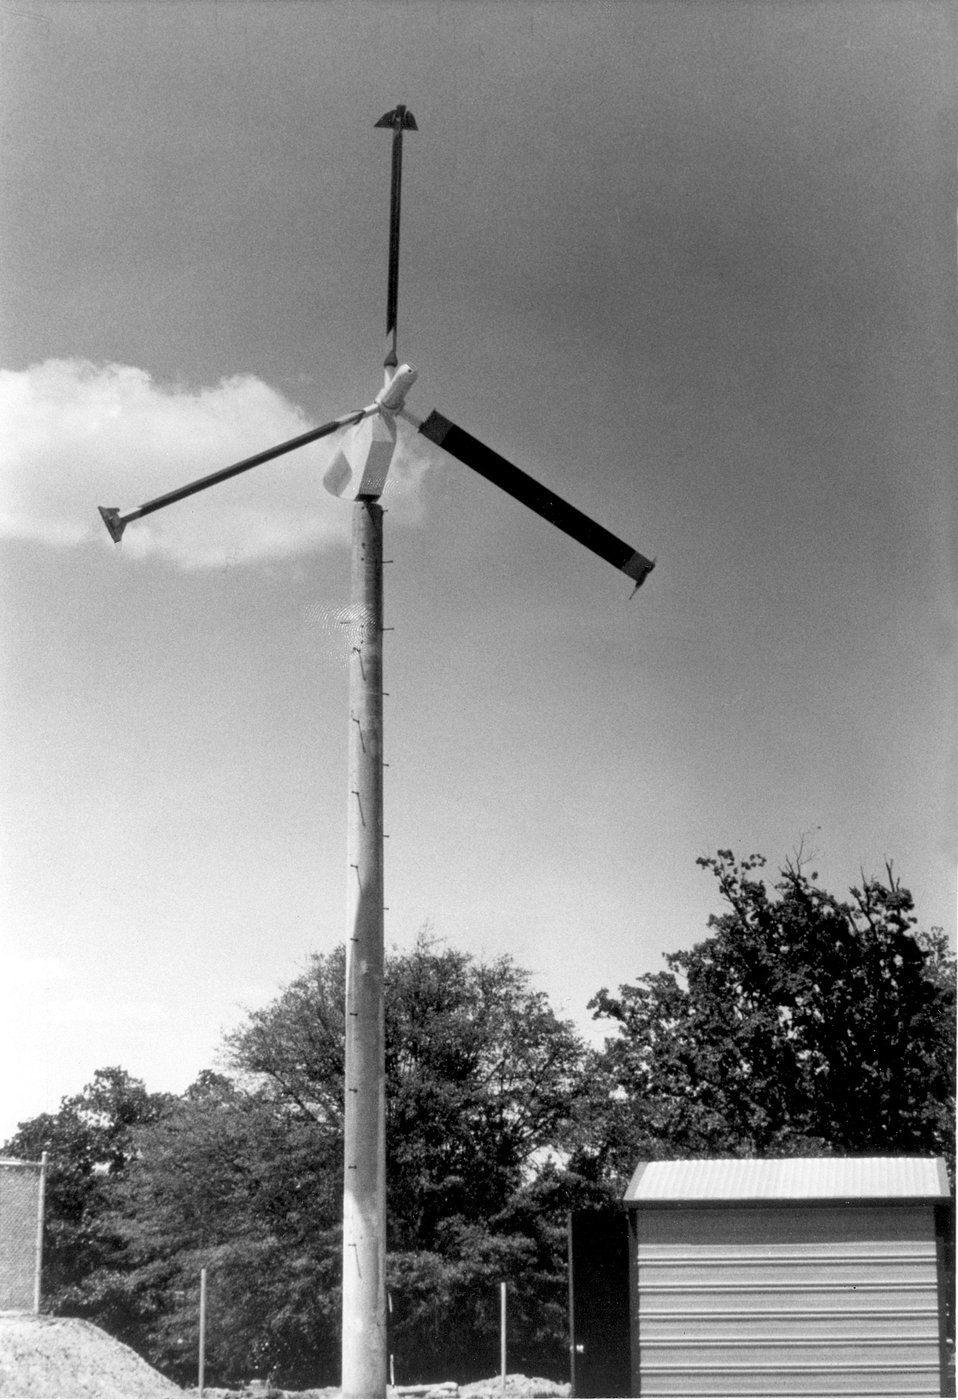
Wind generator installation at Georgia Tech. c. 1978